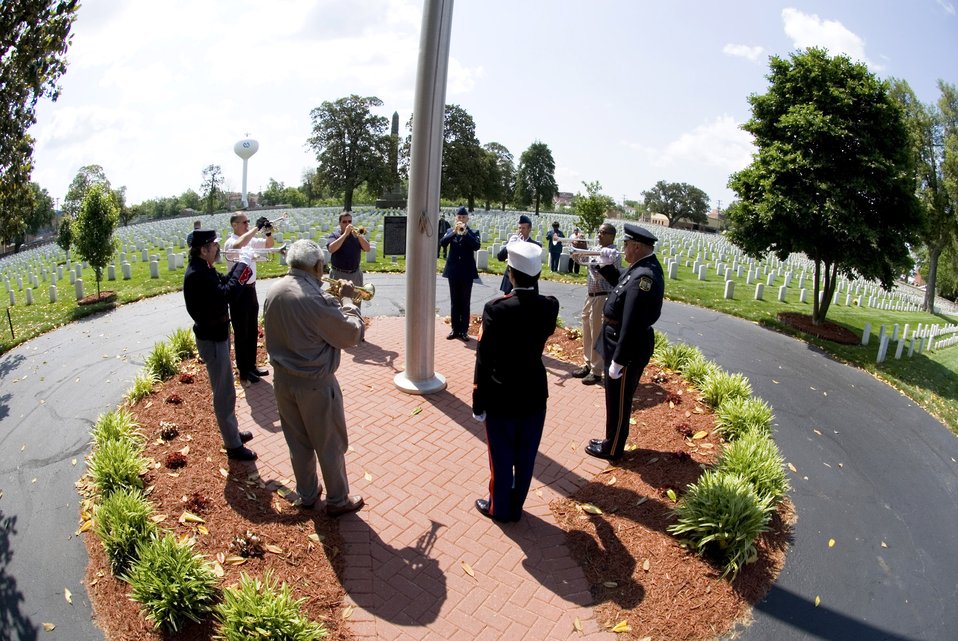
Eight musicians play